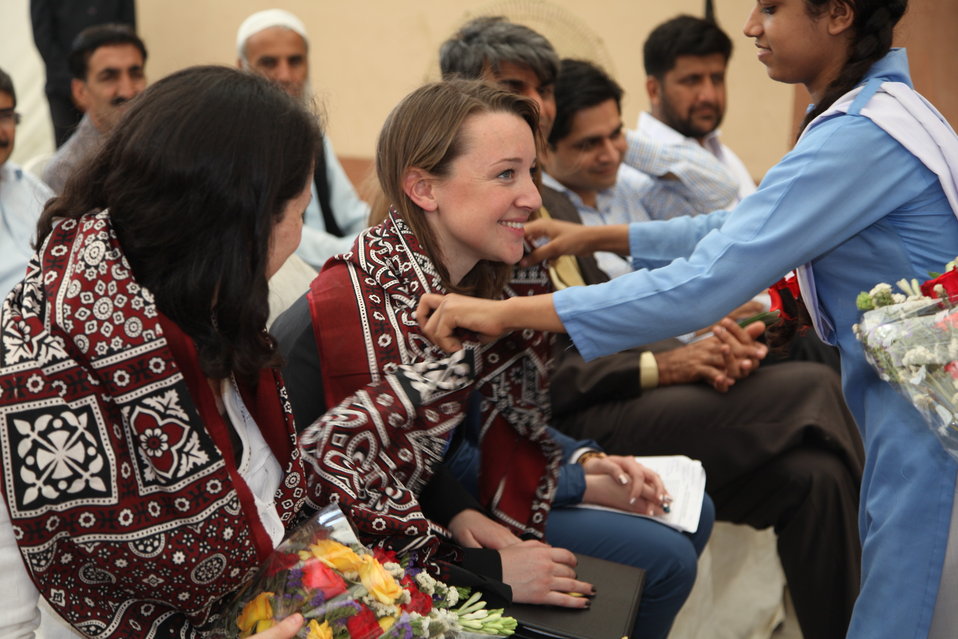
Launch of the USAID National Reading Program in Karachi on April 12, 2012.